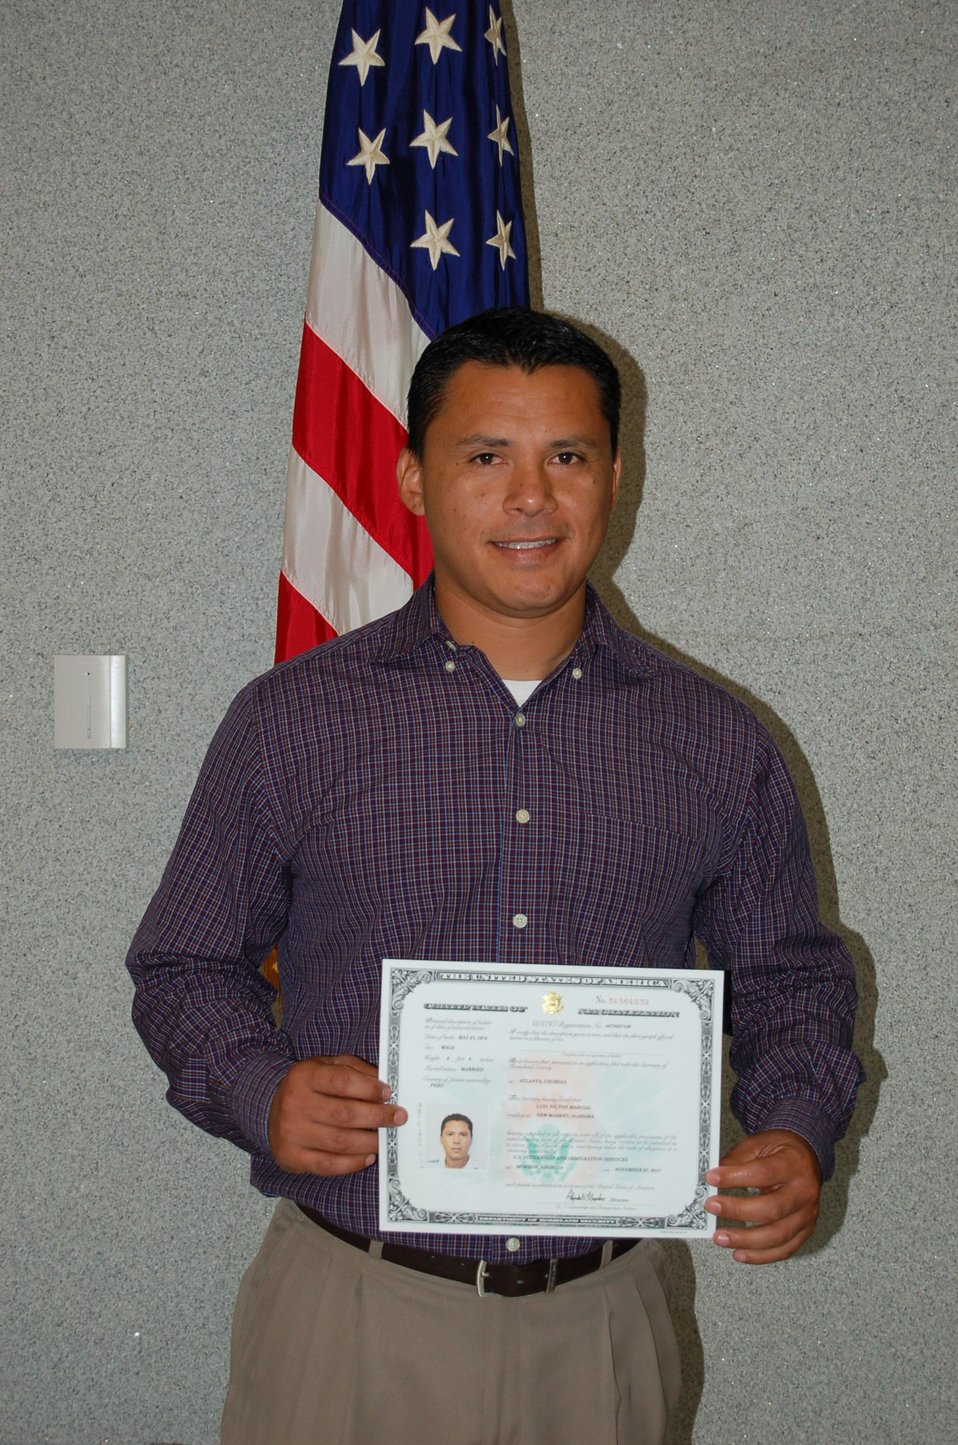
New Citizens